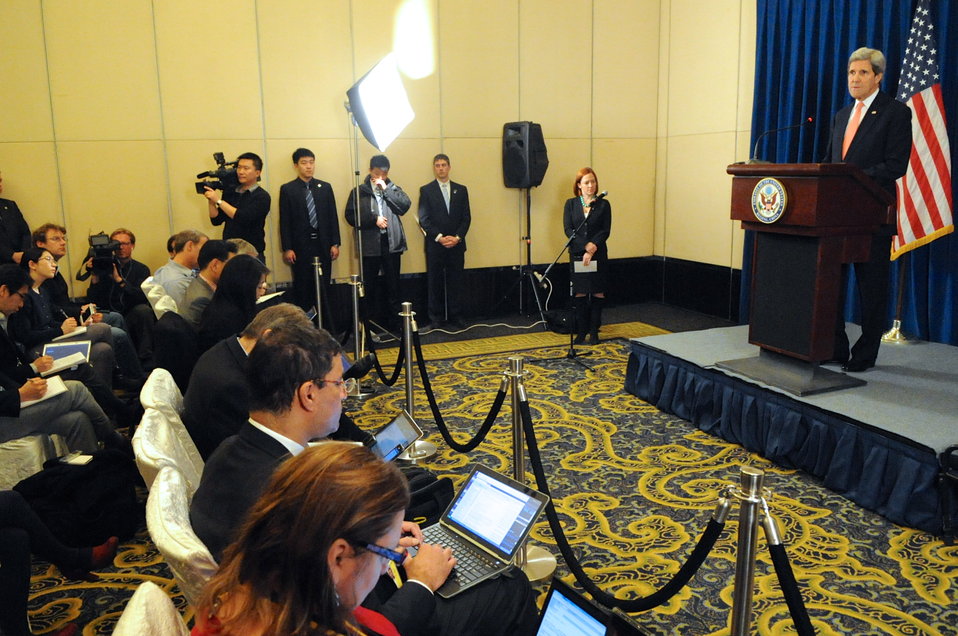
Secretary Kerry Addresses Reporters After Meetings in Beijing

U.S. Secretary of State John Kerry addresses his traveling press corps and Chinese journalists during a news conference following a day of high-level government meetings in Beijing, China on February 14, 2014.